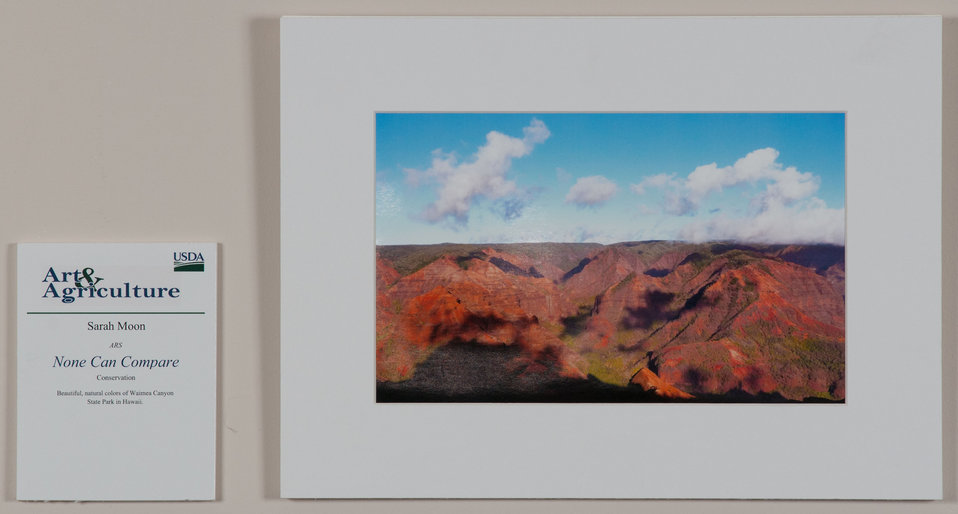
Online Viewer's Choice entries of the 2013 Art & Agriculture, Tuesday, July 9, 2013, in the South Building, Washington, D.C. Themes were expressed by employees from across the department and the contest was open to full-time and part-time USDA employees. Winning artwork will be displayed till the end of the year. U.S. Artistic expression is a creative outlet that is vital for an individual to grow and develop.